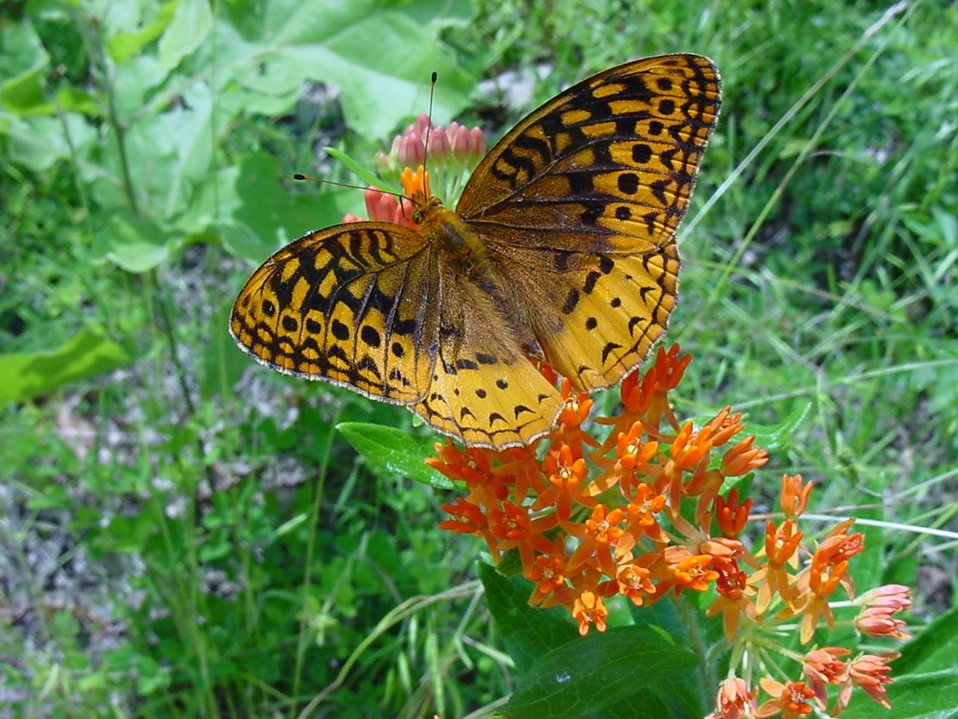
Butterfly and Milkweed

Credit: Terry Heiser / USFWS

Photo Contest Entry #169